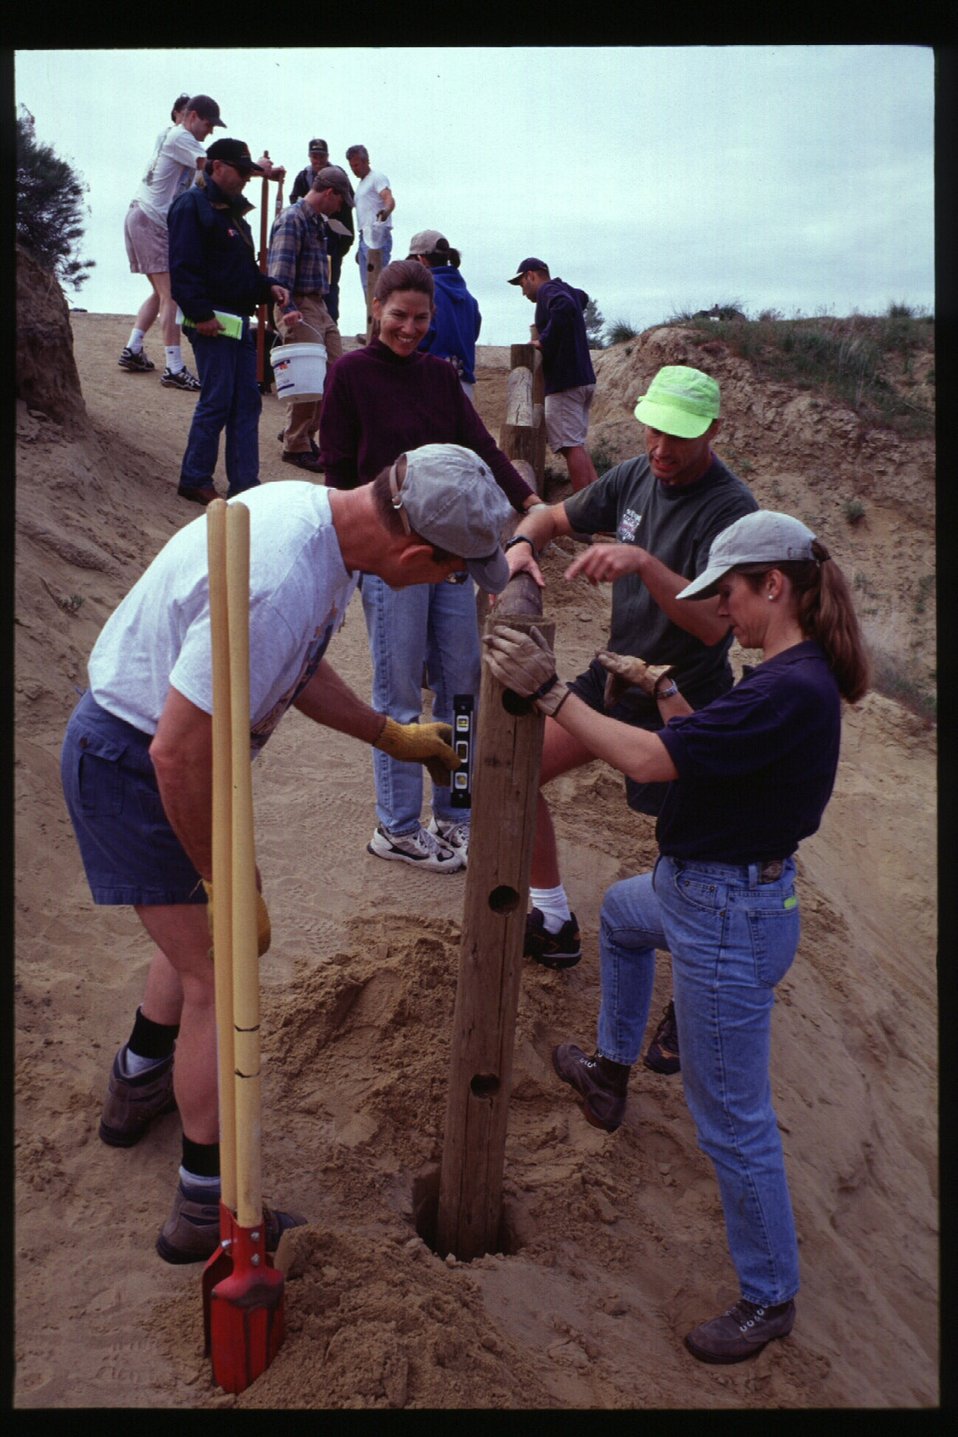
Rangeland and environmental education Boise Front Tending our Foothills Trail work Camels Back Park Four Rivers Field Office LSRD Lower Snake River District